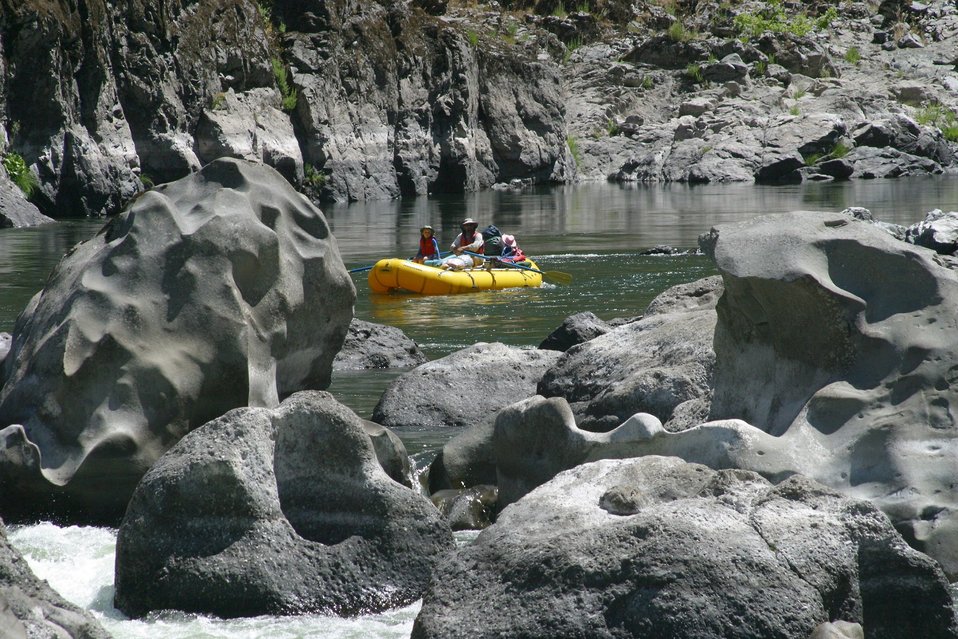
Boaters negotiate Blossom Rapids.